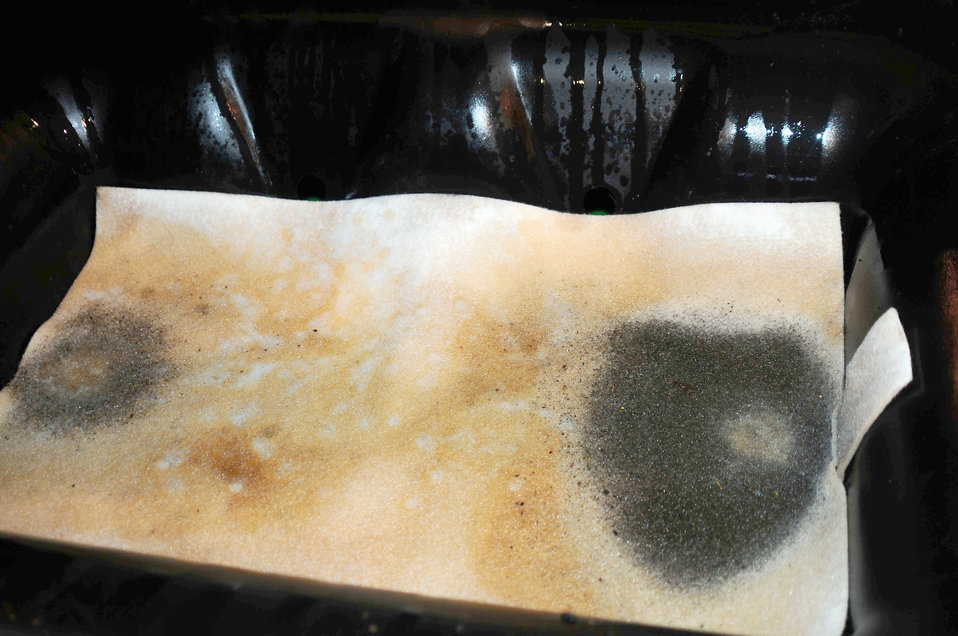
Parts washer at Altus

A new parts washer uses a patented liquid and filter pad to wash away dirt, oil and other pollutants quickly and completely without exposing the workers or the environment to harsh chemicals.